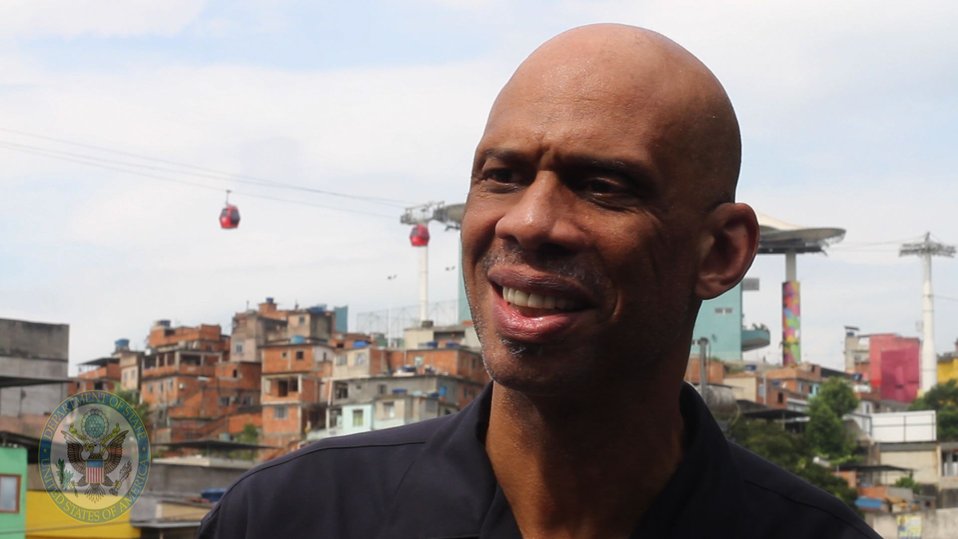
Global Cultural Ambassador Kareem Abdul-Jabbar Engages Youth

Hall-of-Famer and Global Cultural Ambassador for the U.S. Department of State Kareem Abdul-Jabbar discusses the importance of education, social and racial tolerance, cultural understanding, and using sports as a means of empowerment with youth in Rio de Janeiro, Brazil, on January 26, 2012.